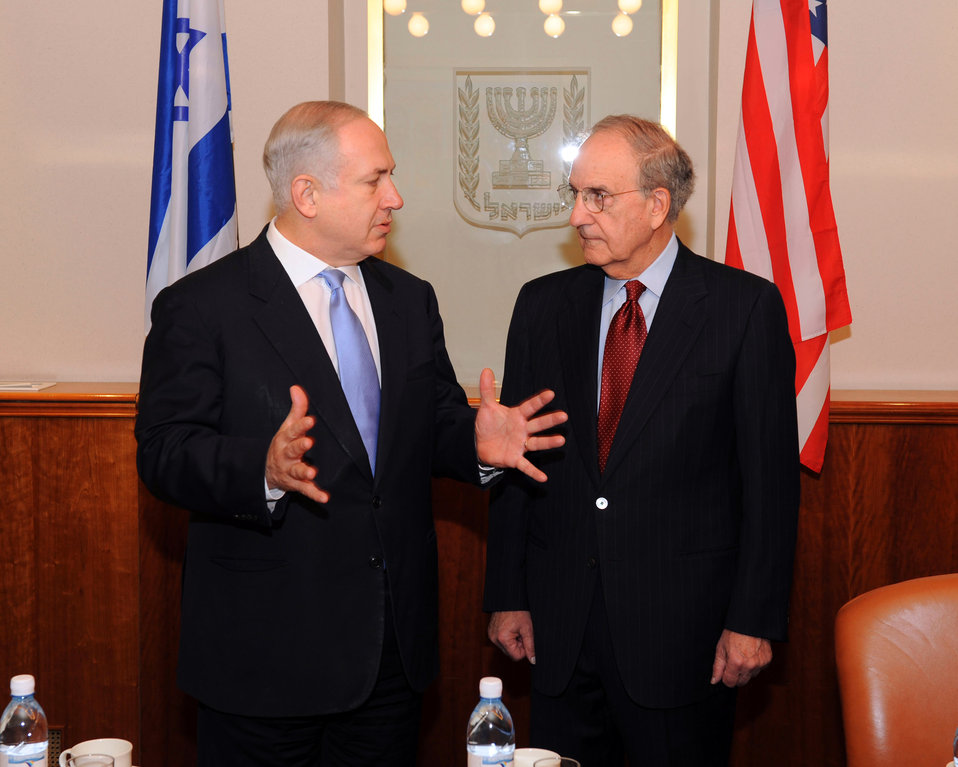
Special Envoy Mitchell Meets With Israeli Prime Minister

U.S. Special Envoy to the Middle East George J. Mitchell meeting with Israeli Prime Minister Benjamin Netanyahu at the Prime Minister Office in Jerusalem, October 30, 2009.